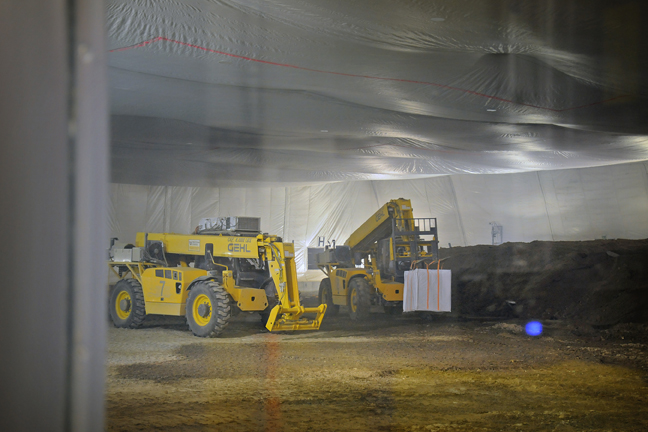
Recovery Act Accelerates Idaho Site Cleanup, Leads to Numerous Accomplishments

Efficiencies and rapid progress in Recovery Act projects freed up an additional $12 million for the exhumation of targeted buried waste from a quarter-acre portion of Pit 9, a 1960s landfill at the Idaho site. Workers are digging up contaminated waste such as filters and solvents that were buried in the pit and are ahead of schedule to complete the project